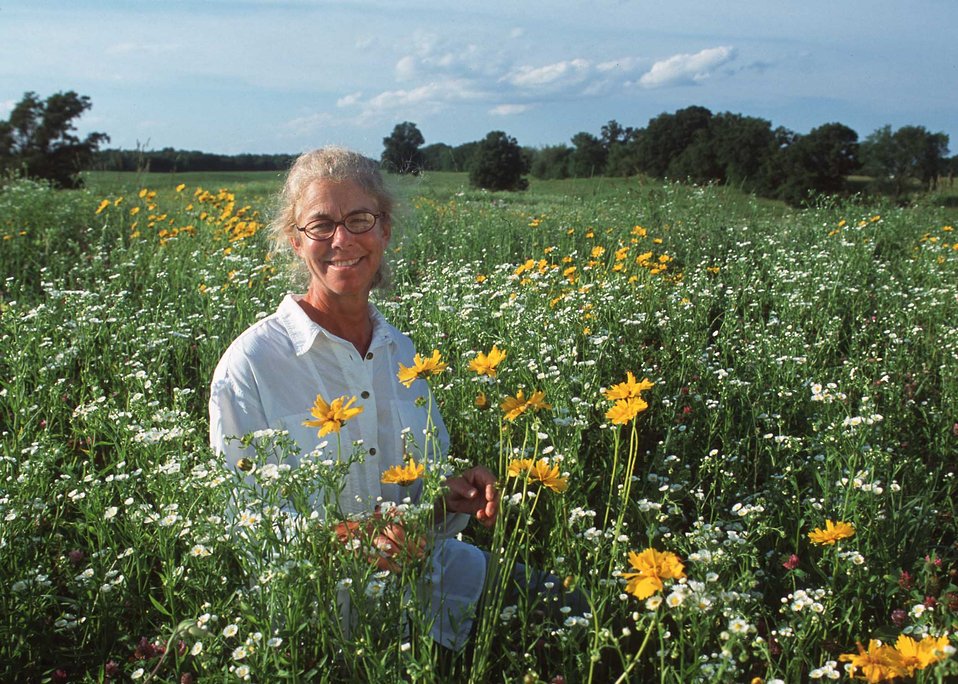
Landowner in a wildflower planting providing wildlife habitat. Mecosta County, Michigan.